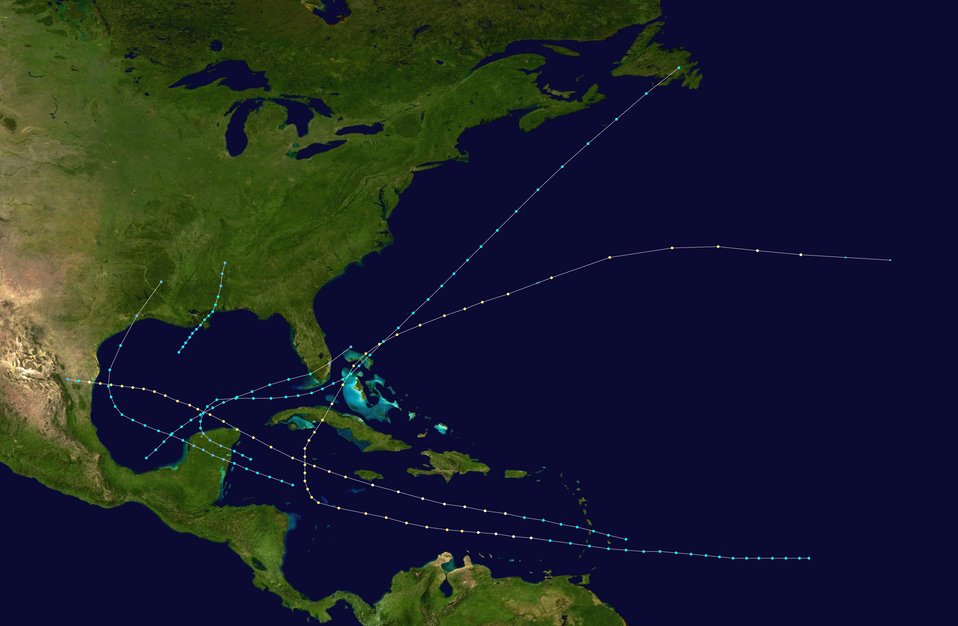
1895 Atlantic hurricane season summary